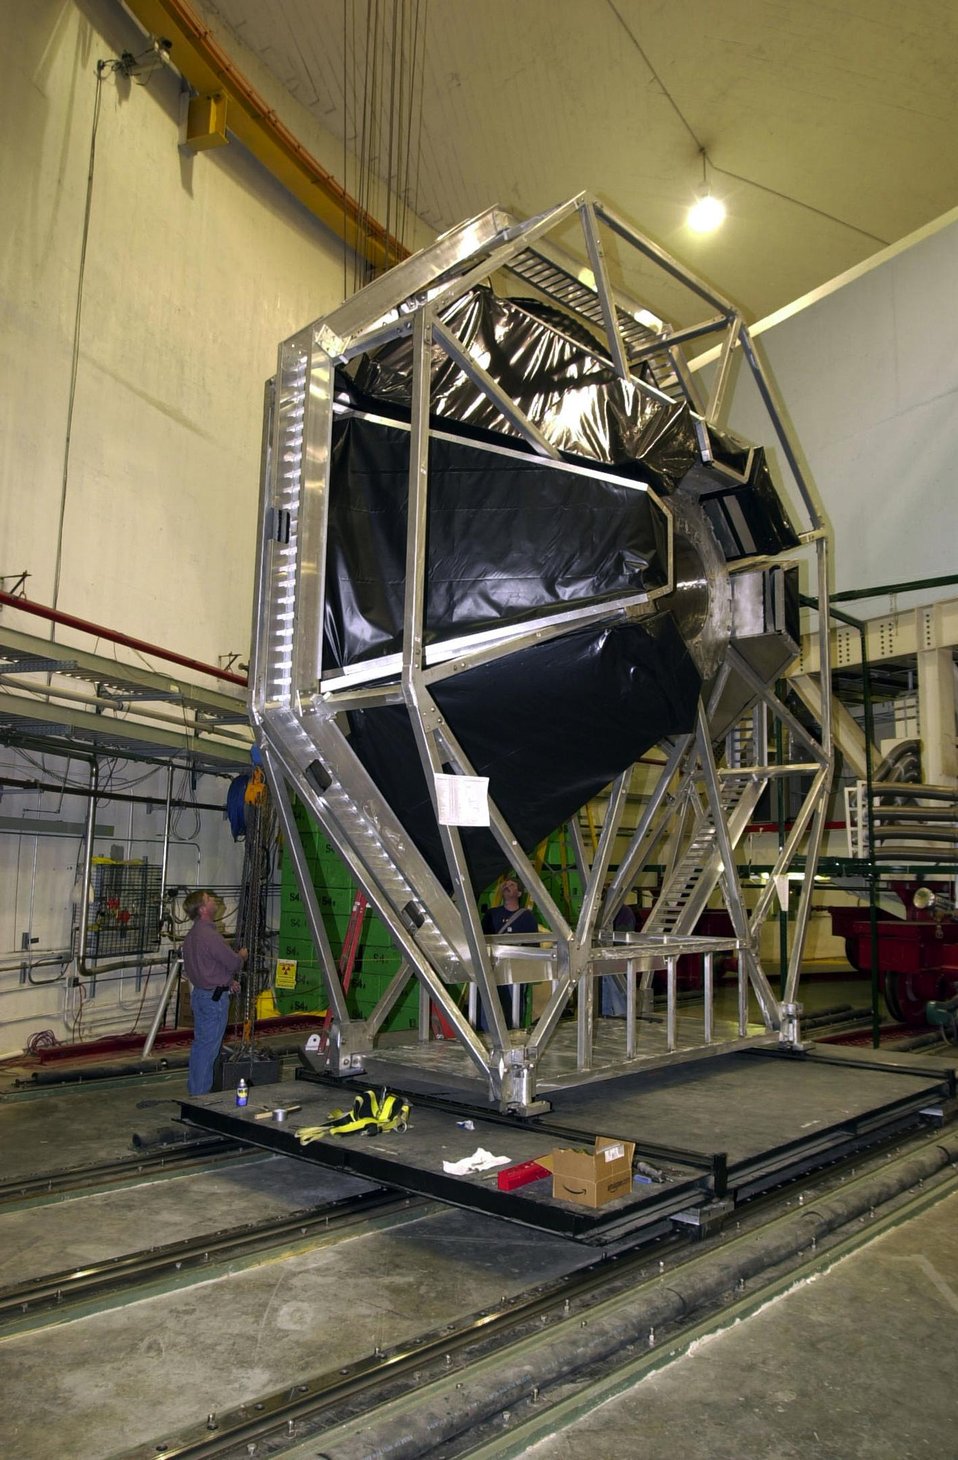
THE GO DETECTOR FERRIS WHEEL UNDER CONSTRUCTION IN HALL C.

THE JEFFERSON LAB IS BUILT FOR NUCLEAR PHYSICS RESEARCH. SCIENTISTS USE SUPERCONDUCTING ELECTRON ACCELERATING TECHNOLOGY AT THE LAB'S CONTINUOUS ELECTRON BEAM ACCELERATOR (CEBAF) TO CONDUCT EXPERIMENTS. HIGH ENERGY ELECTRON BEAMS FROM THE ACCELERATOR ALLOWS SCIENTISTS TO PROBE THE ATOM'S NUCLEUS, REVEALING HOW QUARKS MAKE UP PROTONS, NEUTRONS, AND THE NUCLEUS ITSELF.